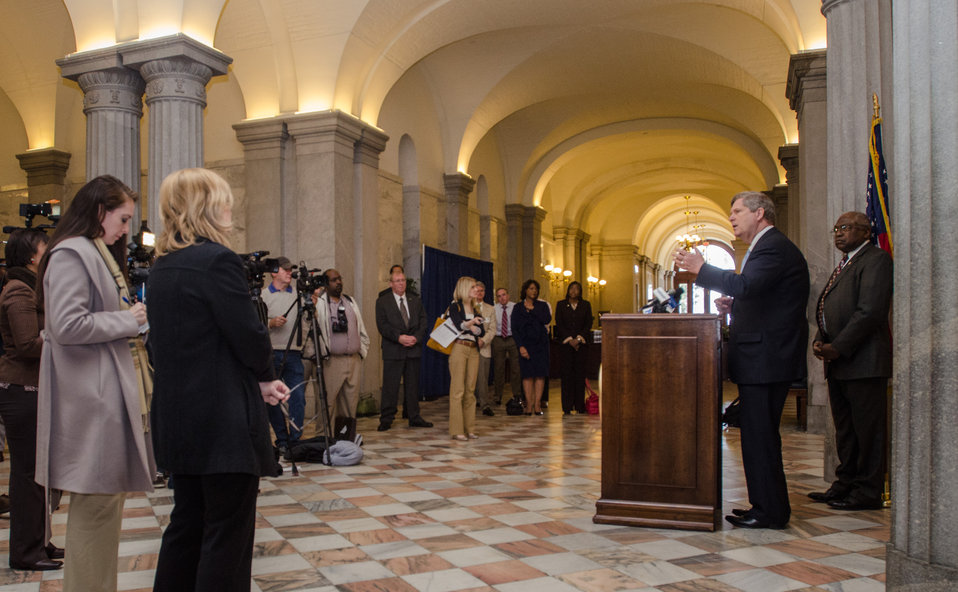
Agriculture Secretary Tom Vilsack (podium) and South Carolina Congressman James E. Clyburn hold a press conference in the South Caroline State Capitol in Columbia, SC after the kick off of the Strike Force Initiative For Rural Growth and Opportunity at Voorhees College in Denmark, SC, on Tuesday, Mar. 26, 2013.